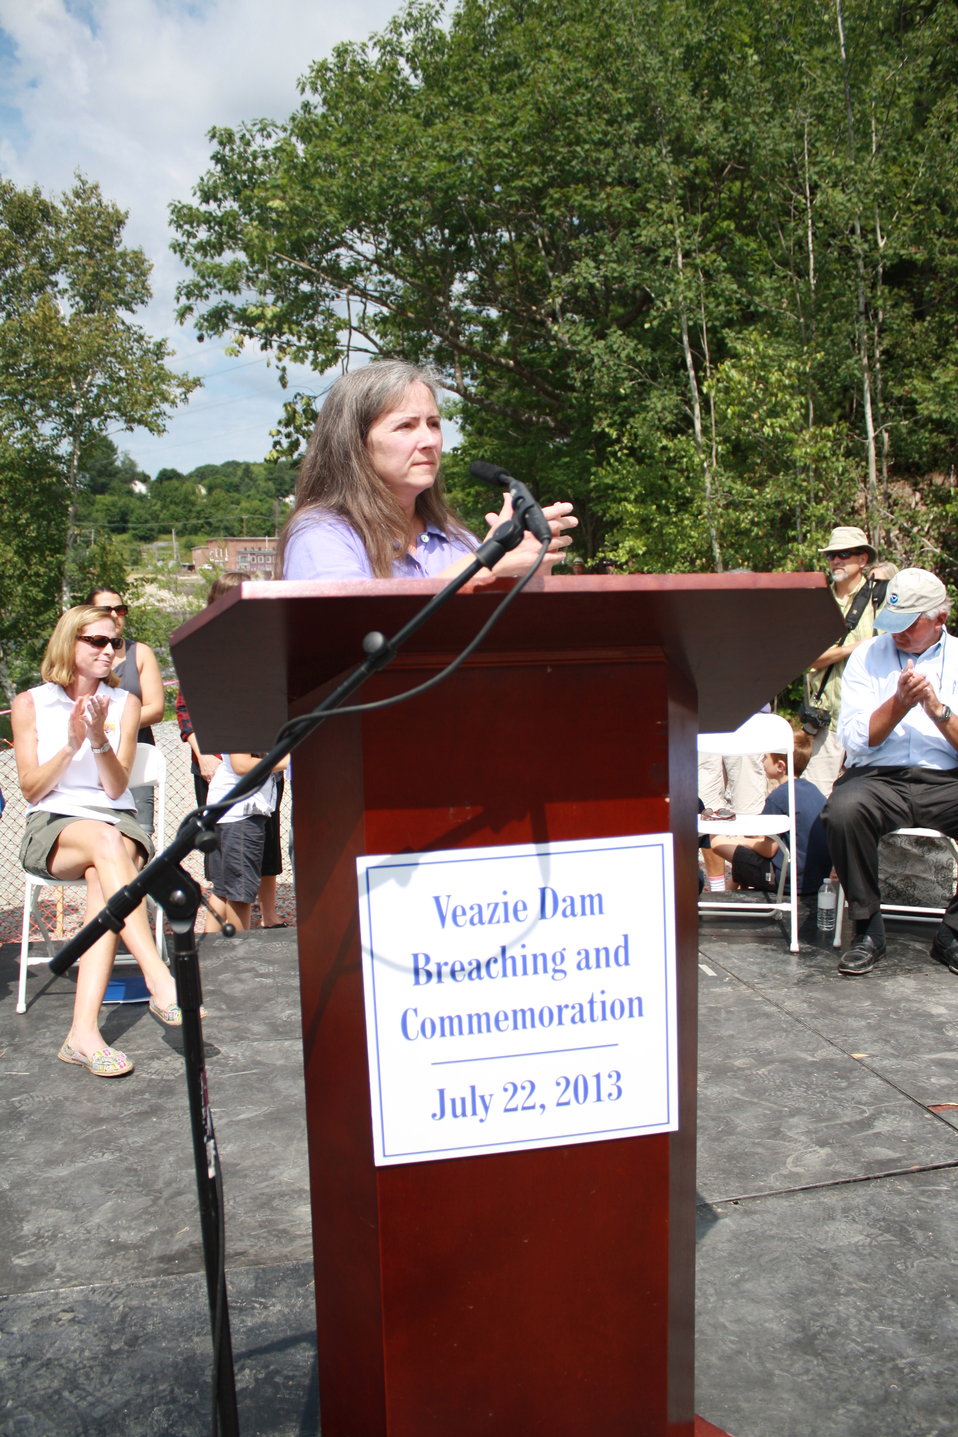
Veazie Dam Removal

Laura Rose Day, Executive Director of the Penobscot River Restoration Trust.